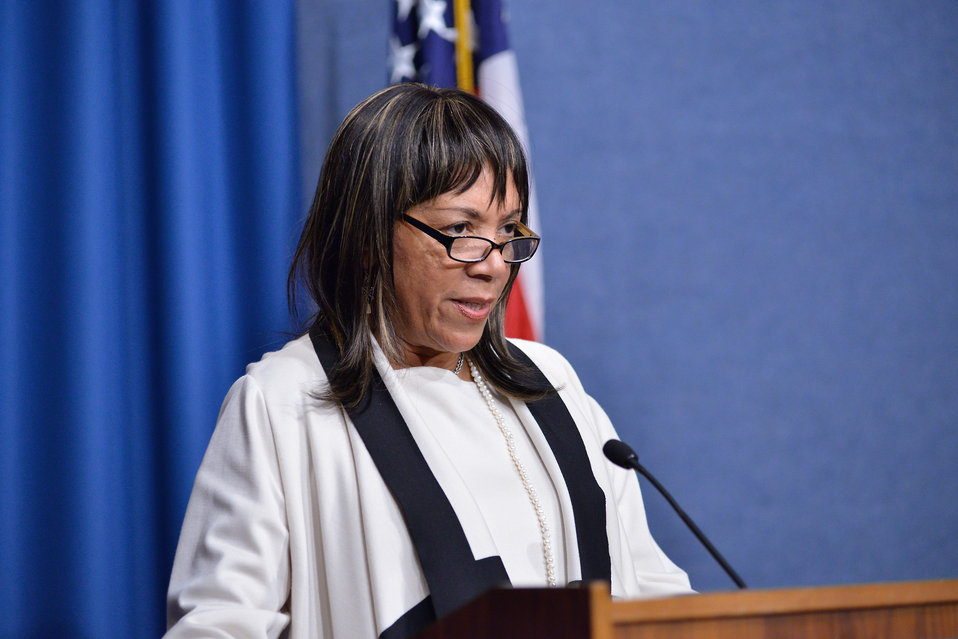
Annie Whatley

Annie P. Whatley, Deputy Director of the Office of Minority Economic Impact, Office of Economic Impact and Diversity, speaks at the meet and greet for charter employees on October 4, 2012. Mrs. Whatley has worked at the Department of Energy since it was founded in 1977.